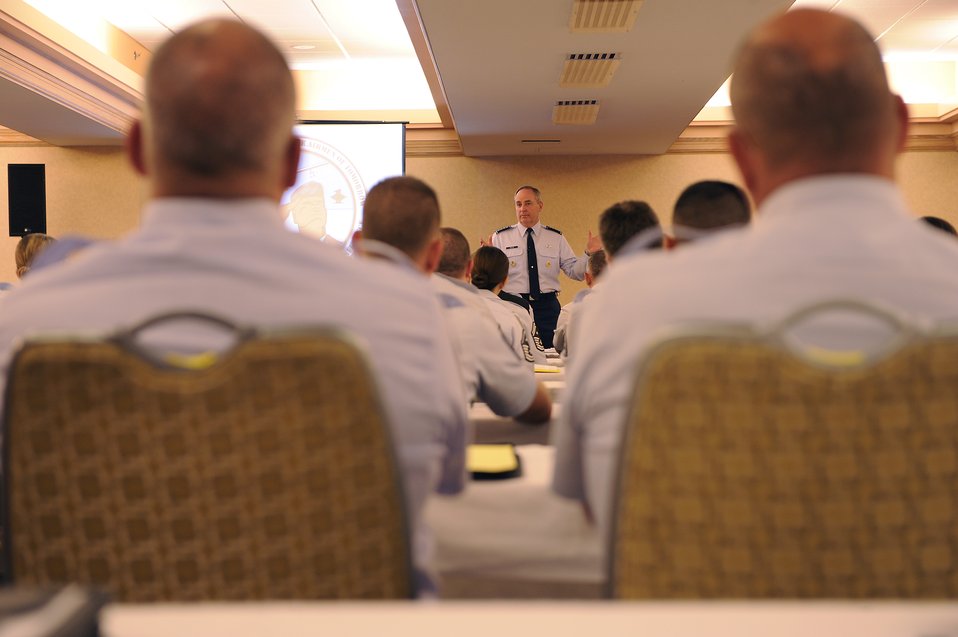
CSAF talks leadership

Air Force Chief of Staff Gen. Mark A. Welsh III speaks to Airmen during the Air Force First Sergeant Leadership Conference at Jacksonville, Fla., Aug. 15, 2012. The conference gathers active duty, Guard and Reserve first sergeants from across the service to discuss issues affecting the mission, Airmen and their families.